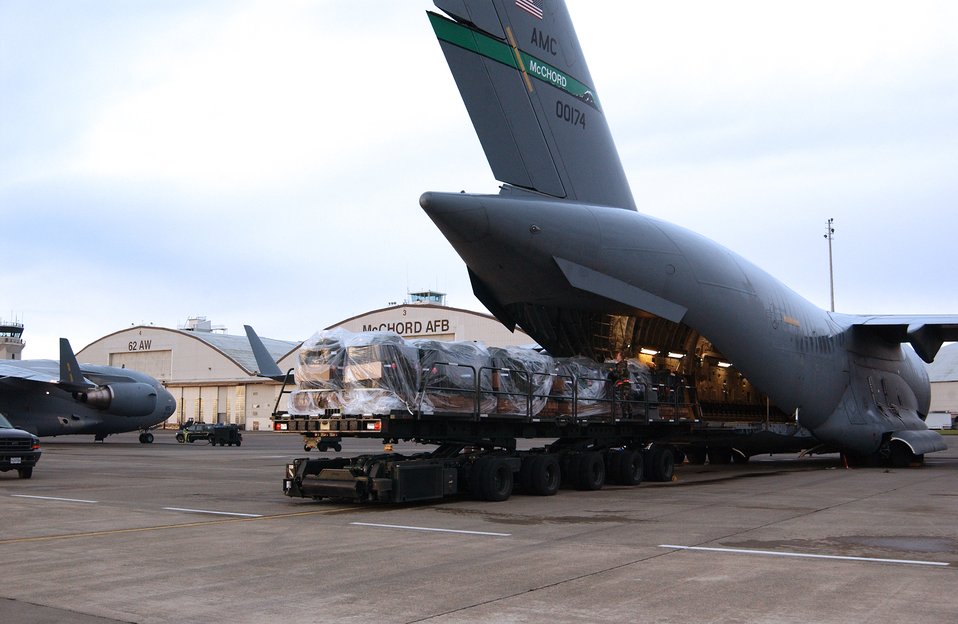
C-17 makes first polar airdrop

MCCHORD AIR FORCE BASE, Wash. -- Pallets of fuel are loaded onto a C-17 Globemaster III here to support the C-17 Globemaster III's first polar airdrop. About 10,000 gallons of fuel were dropped to help National Science Foundation scientists near the North Pole.